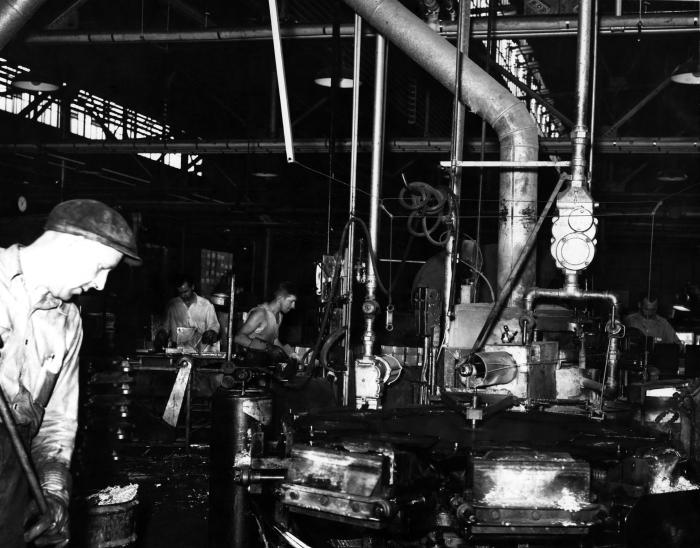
Published in the 'Public Health Bulletin', No. 262, 1941, this historic image, which was provided by the Center for Disease Control's (CDC), National Institute for Occupational Safety and Health (NIOSH), depicted a battery factory in which workers were in the process of assembling storage batteries. These men were stationed at a 'casting' machine, equipped with a local exhaust system in order to remove some of the toxic fumes emanating from the manufacturing process. As a device containing both lead, a toxic heavy metal, and acid, in the form of sulfuric acid, batteries are potentially dangerous, both in their finished state, as well as during their manufacture. Precautions need be taken when building a battery, including the use of goggles, gloves, and filtered breathing devices. Only gloves were being implemented by these workers.